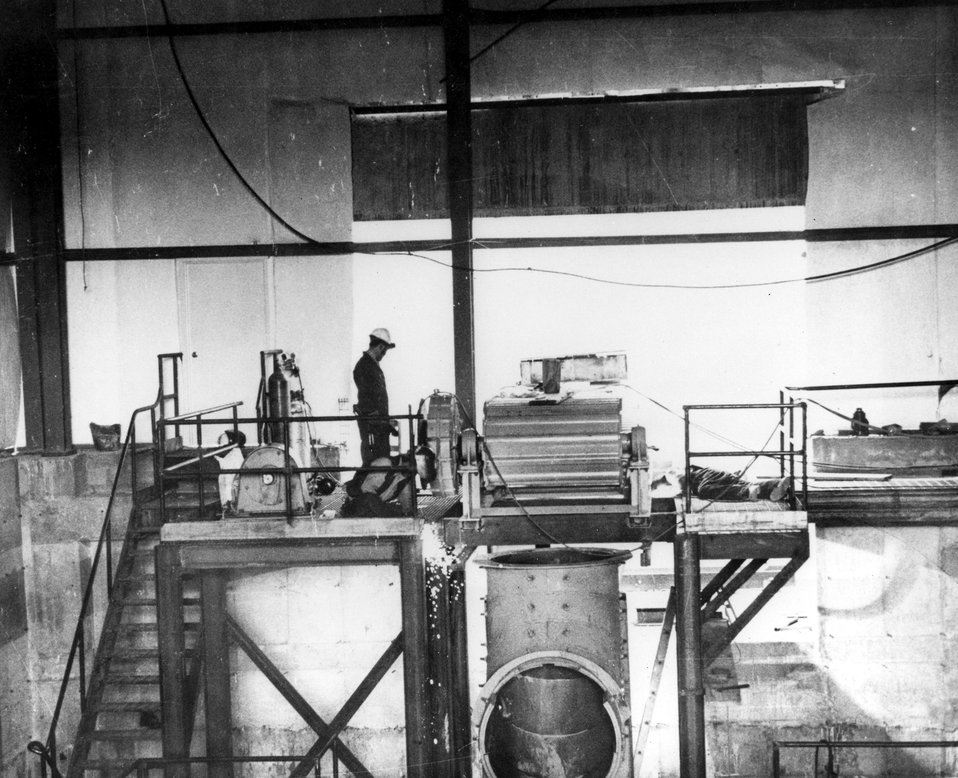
A view of the grinding and crushing room of the Western Nuclear Inc. operation near Jeffrey City, Wyoming. c. 1976